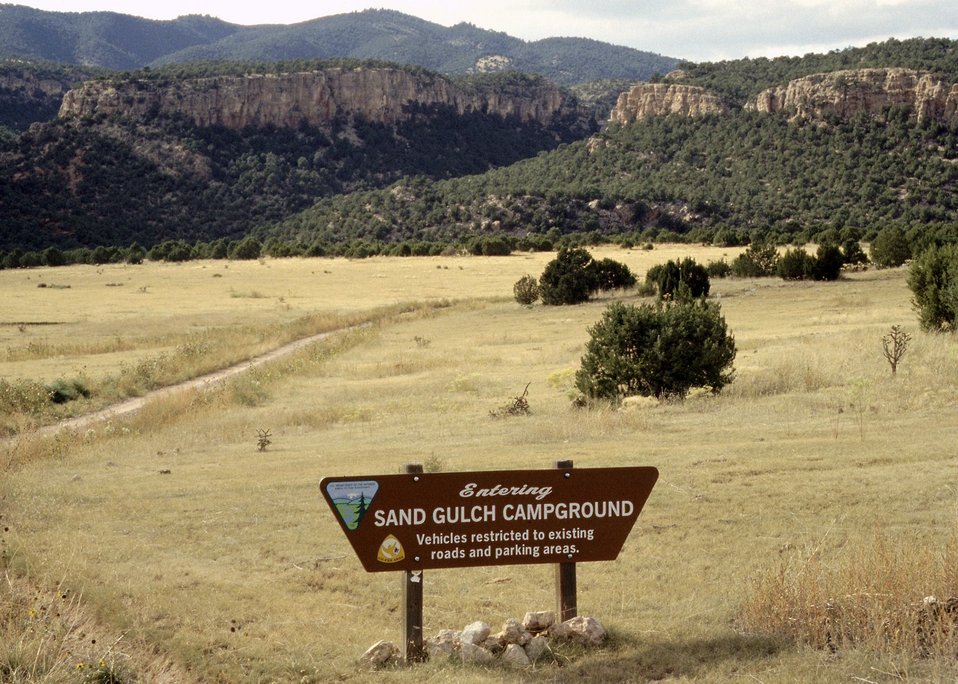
Sand Guitch camp ground sign